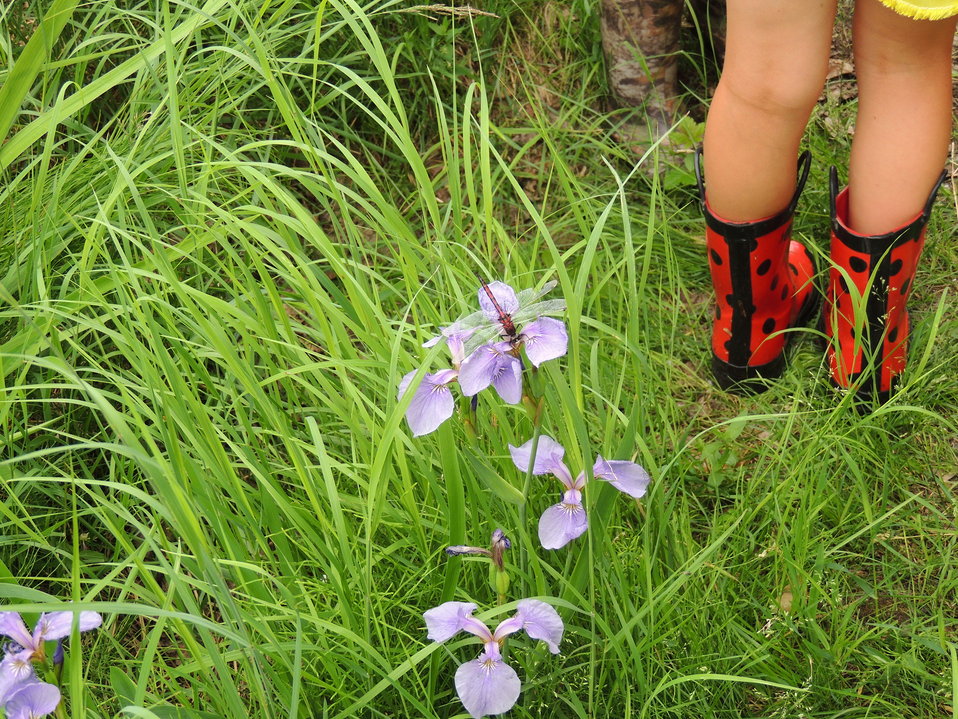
Dragonfly Day 2013

(USFWS)